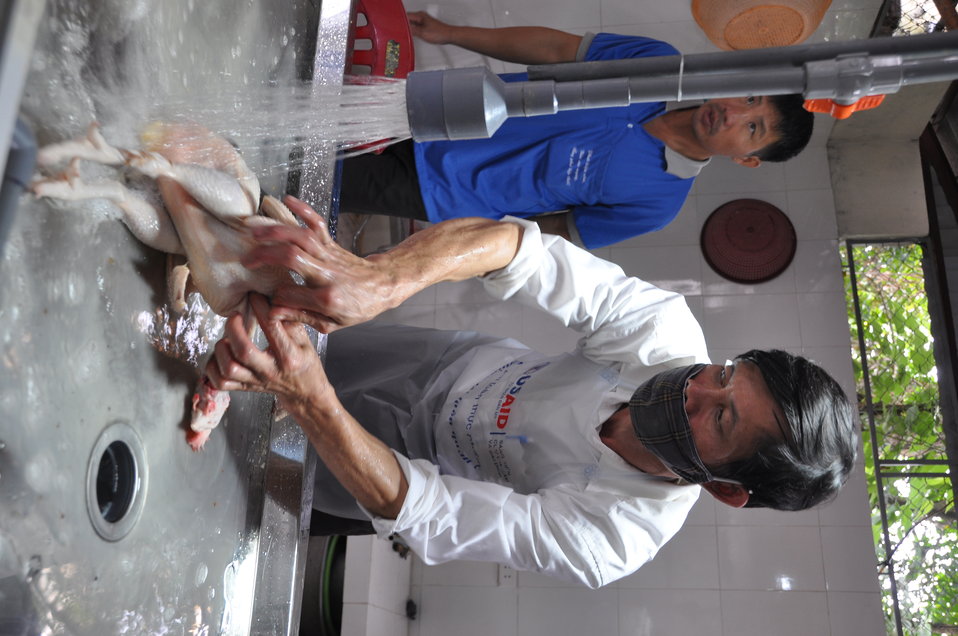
Handover Ceremony Hoa Mac Market Ha Nam

October 26, 2012